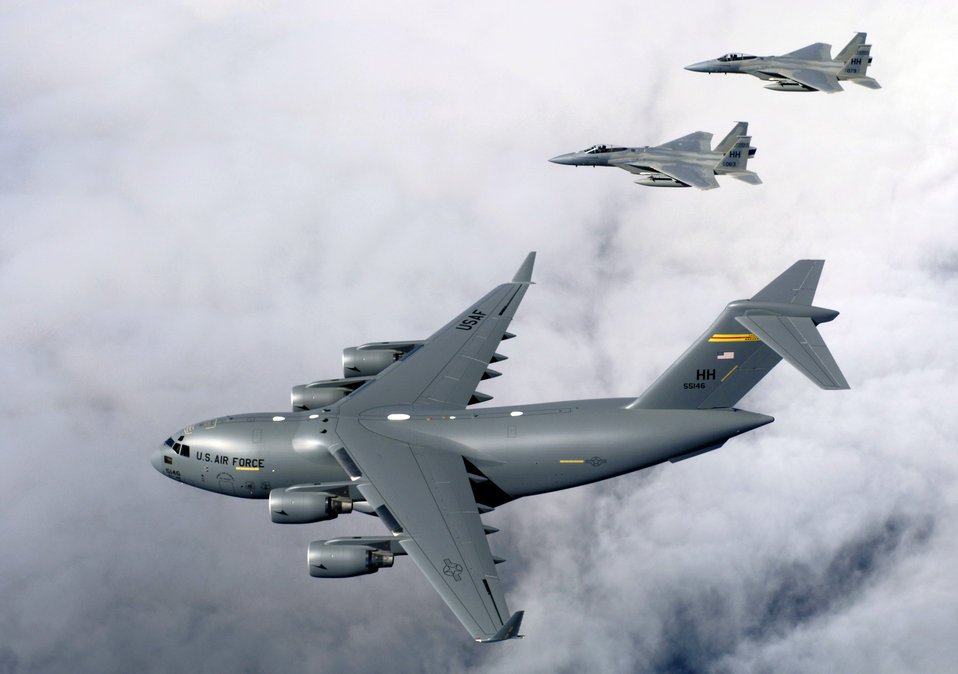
C-17 a first at Hickam AFB

HICKAM AIR FORCE BASE, Hawaii (AFPN) -- F-15B Eagles from the 199th Fighter Squadron, 154th Wing, Hawaii Air National Guard escort the first Hawaii-based C-17 Globemaster III to its home. Hickam is the first base outside the continental U.S. to permanently host the C-17. By the end of the year the base will be home to eight C-17s. The 15th Airlift Wing and the 154th Wing will jointly operate and maintain the aircraft.